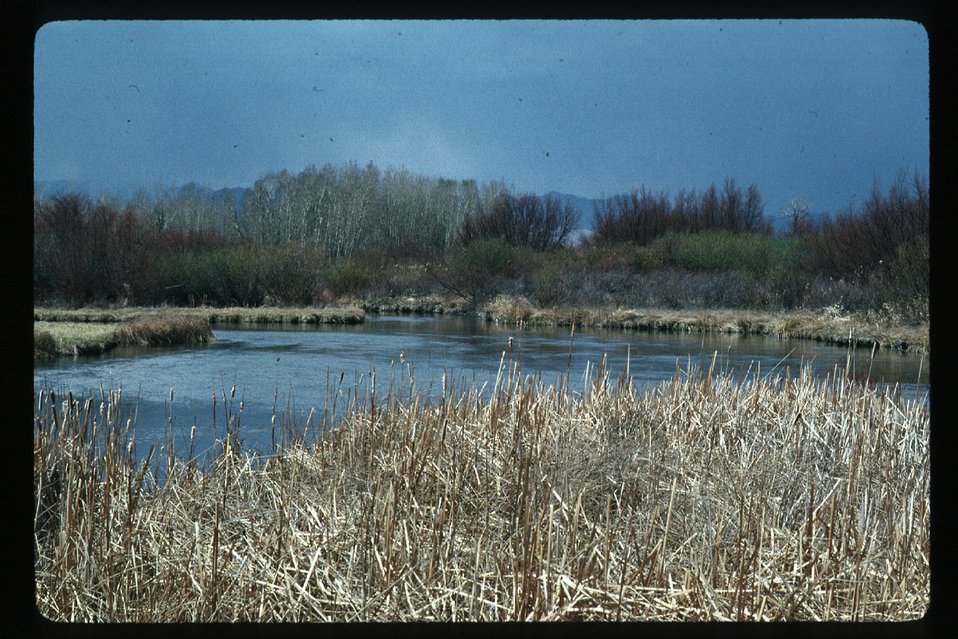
Reeds in a riparian area LSRD Lower Snake River District